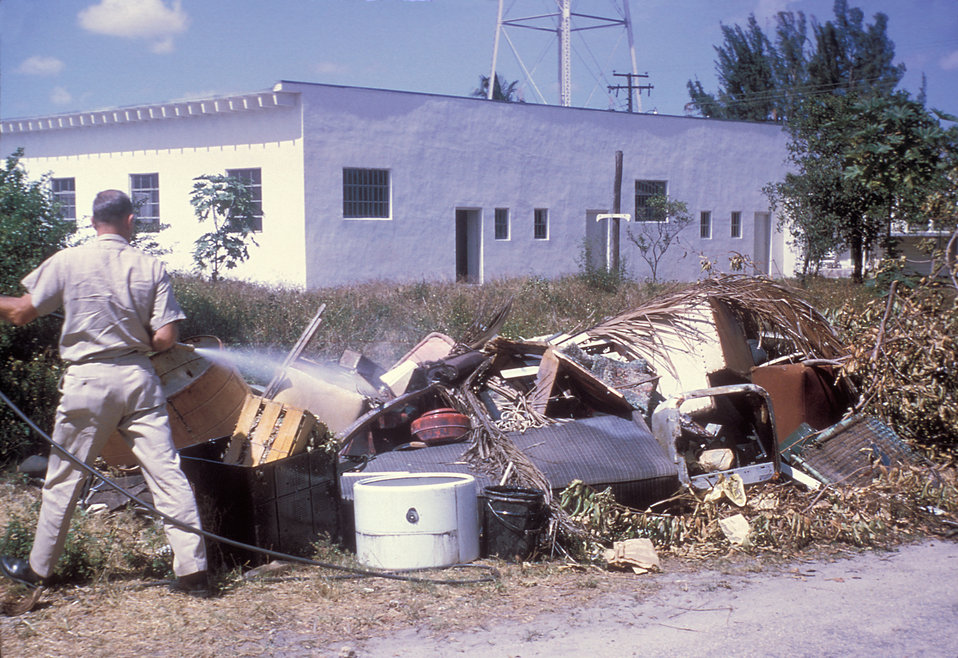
Worker sprays junk to kill any mosquito larvae that might be present.